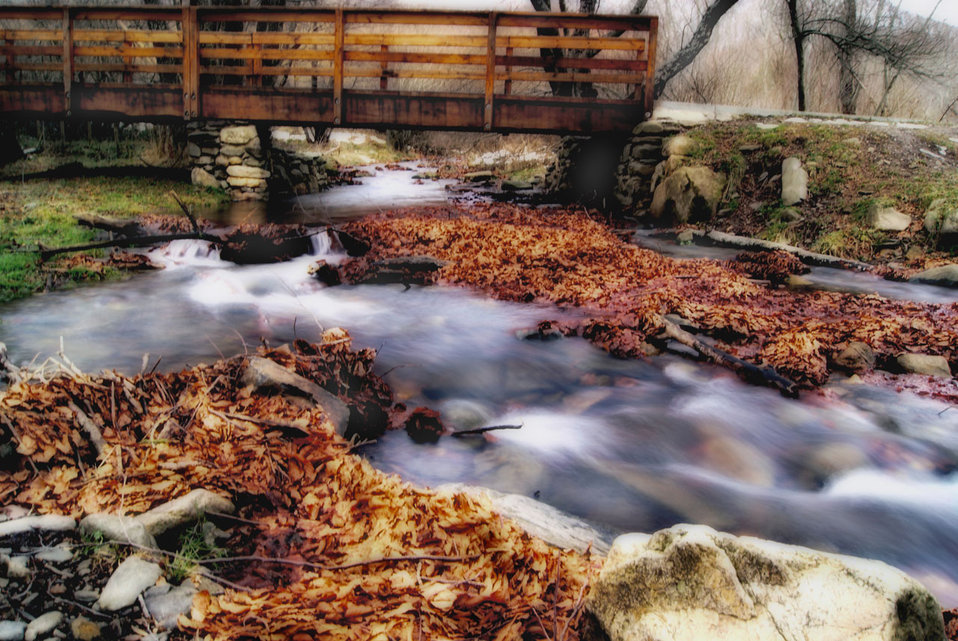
A mysterious river ....

River in the montseny, with retouching the effect of water is perfect.